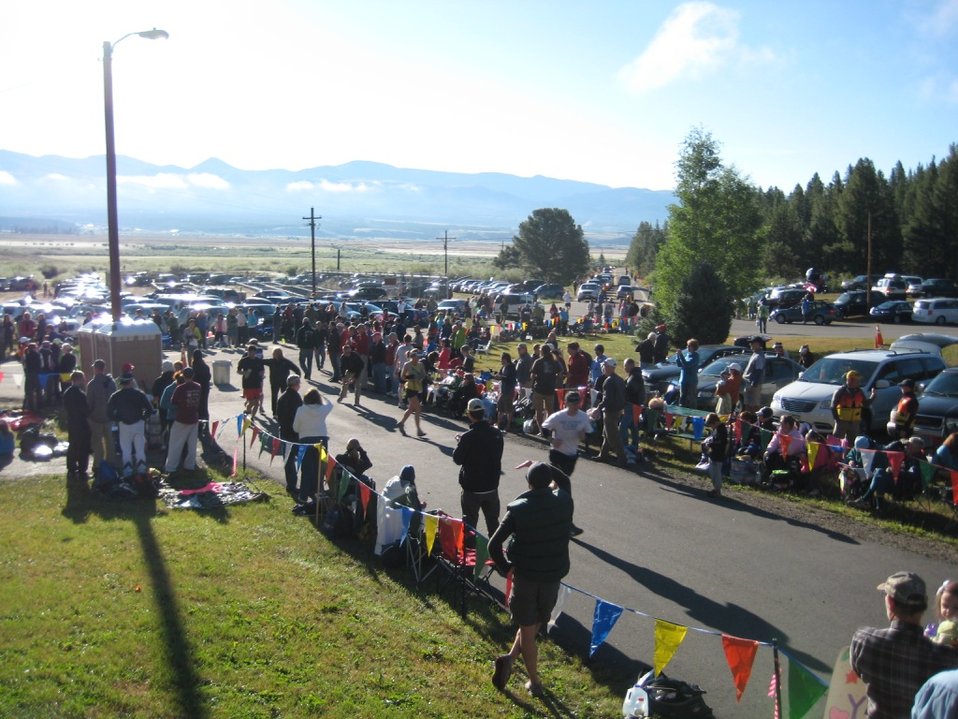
Looking east from Leadville National Fish Hatchery

Spectators and supporters line the streets of Leadville National Fish Hatchery for the Leadville Trail 100 run.